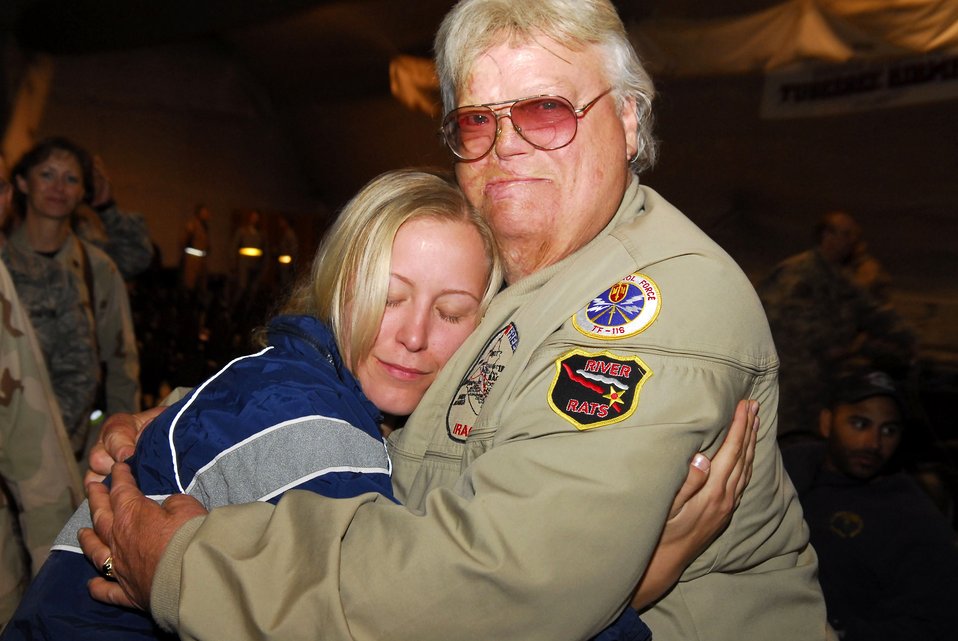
Veteran hope

Senior Airman Amanda Arndt is comforted by Dave Roever after his Nov. 26 speech at Balad Air Base, Iraq. A severely disabled Vietnam War veteran, Mr. Roever delivered a message of hope and encouragement to servicemembers and extended the support of the American people. Airman Arndt, assigned to the 332nd Expeditionary Civil Engineer Squadron, is deployed from Yokota Air Base, Japan.